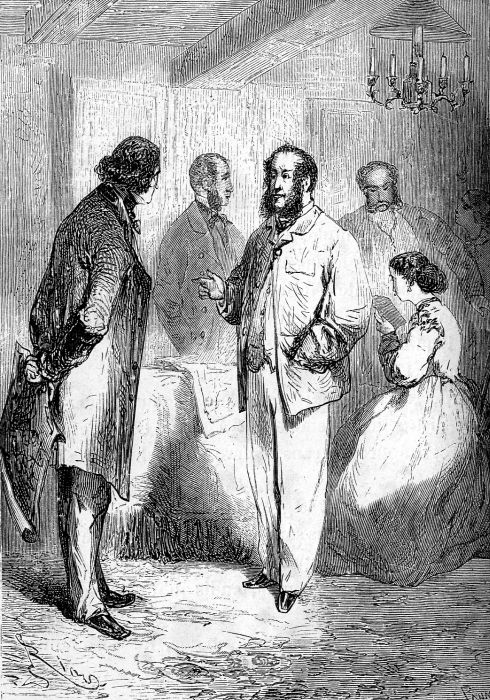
An ilustration from the novel 'In Search of the Castaways; or Captain Grant's Children' by Jules Verne drawn by Édouard Riou. Polski: Ilustracja powieści Juliusza Verne'a 'Dzieci kapitana Granta' autorstwa Édouarda Riou. Français : 'Les Enfants du capitaine Grant', Édouard Riou. Français : Le savant, mis en demeure de parler, s’exécuta aussitôt.